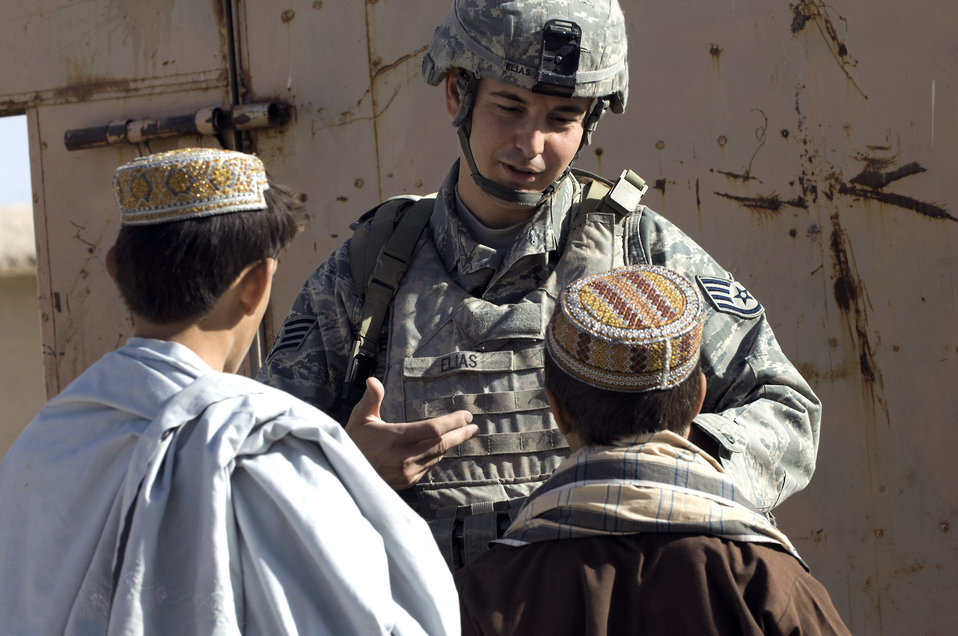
Airman helps make a difference in Afghanistan

Staff Sgt. Don Elias talks with two Afghan boys while providing security during a veterinary outreach held by the Zabul Provincial Reconstruction Team Oct. 17 in Qalat, Afghanistan. The team provided free treatment to the nomadic Kuchi tribe's livestock. Sergeant Elias is deployed to the PRT as the force protection NCO in charge from Wright-Patterson Air Force Base, Ohio. He is a native of Buffalo, N.Y.